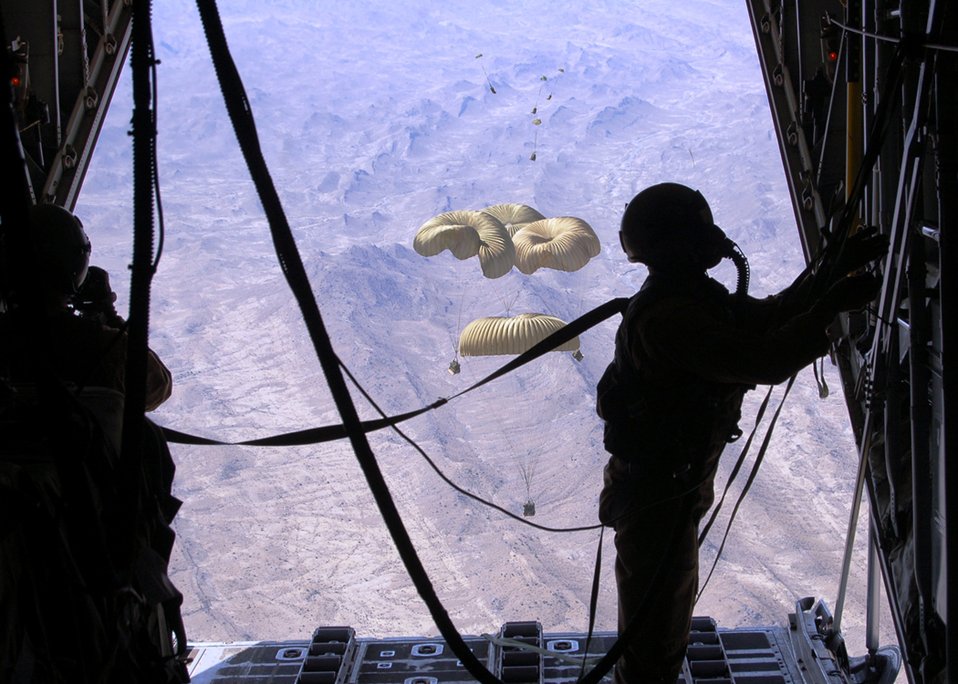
Airpower summary for Nov. 4, 2007

A loadmaster secures the ramp of a C-130 Hercules after dropping critical supplies to replenish coalition ground forces. Airdrops provide re-supply to forward operating locations in Afghanistan supporting Operation Enduring Freedom.